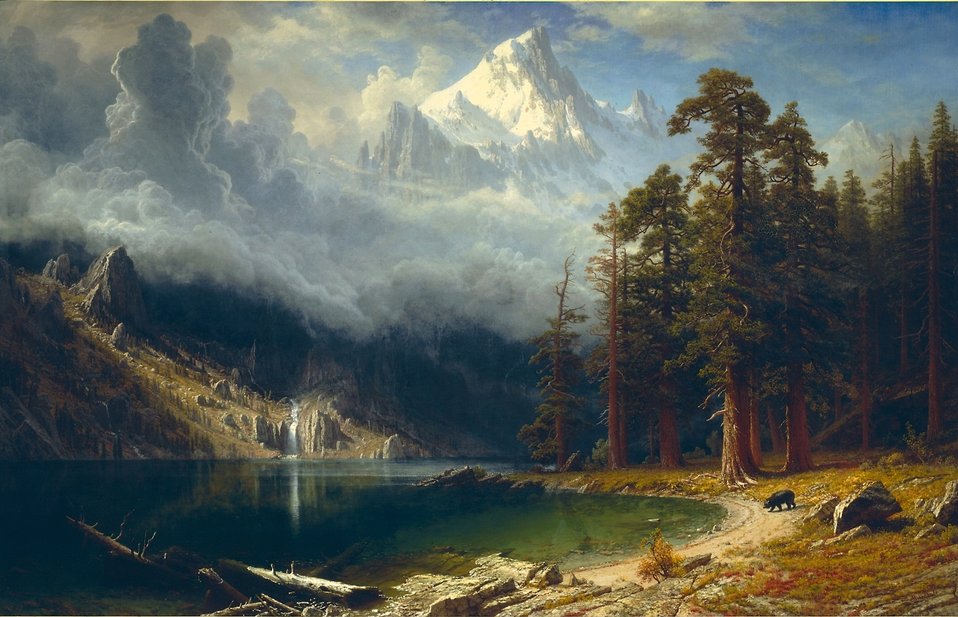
Albert Bierstadt - Mount Corcoran